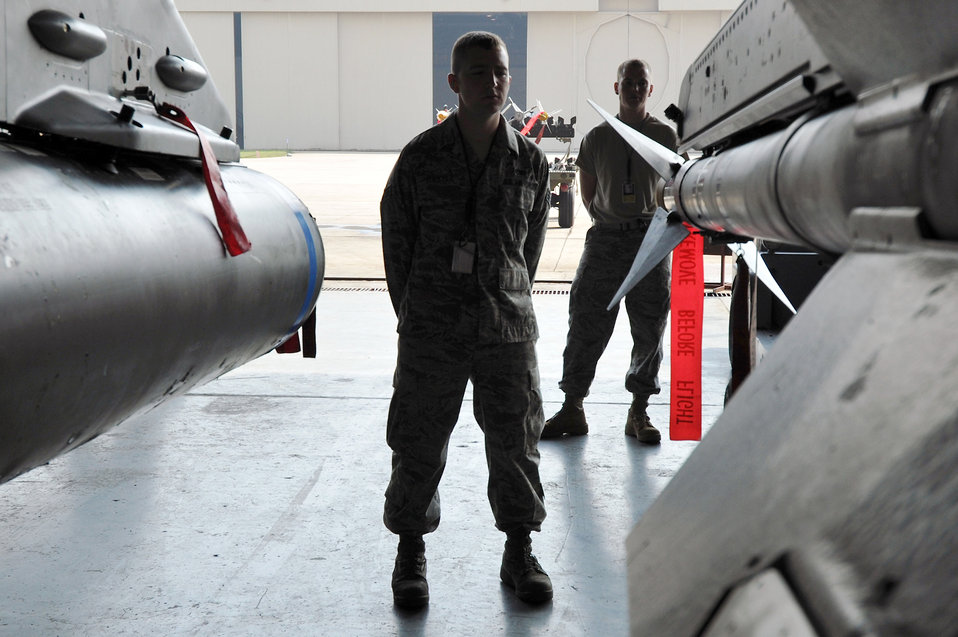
Load crew evaluation

Members of a load crew participate in an evaluation June 28, 2011, at Kunsan Air Base, South Korea.